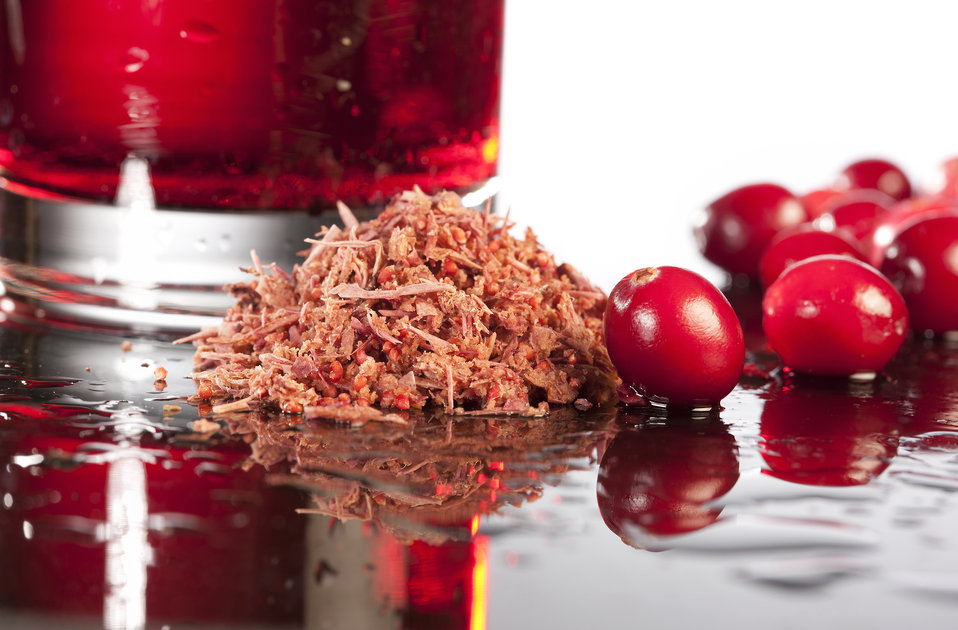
U.S. Department of Agriculture (USDA) Agriculture Research Service (ARS) scientists examine the types and amounts of interesting compounds in cranberry pomace, which is the stems, skin, and pulp left over after the berries are pressed to make juice or canned products on Oct. 16, 2003.